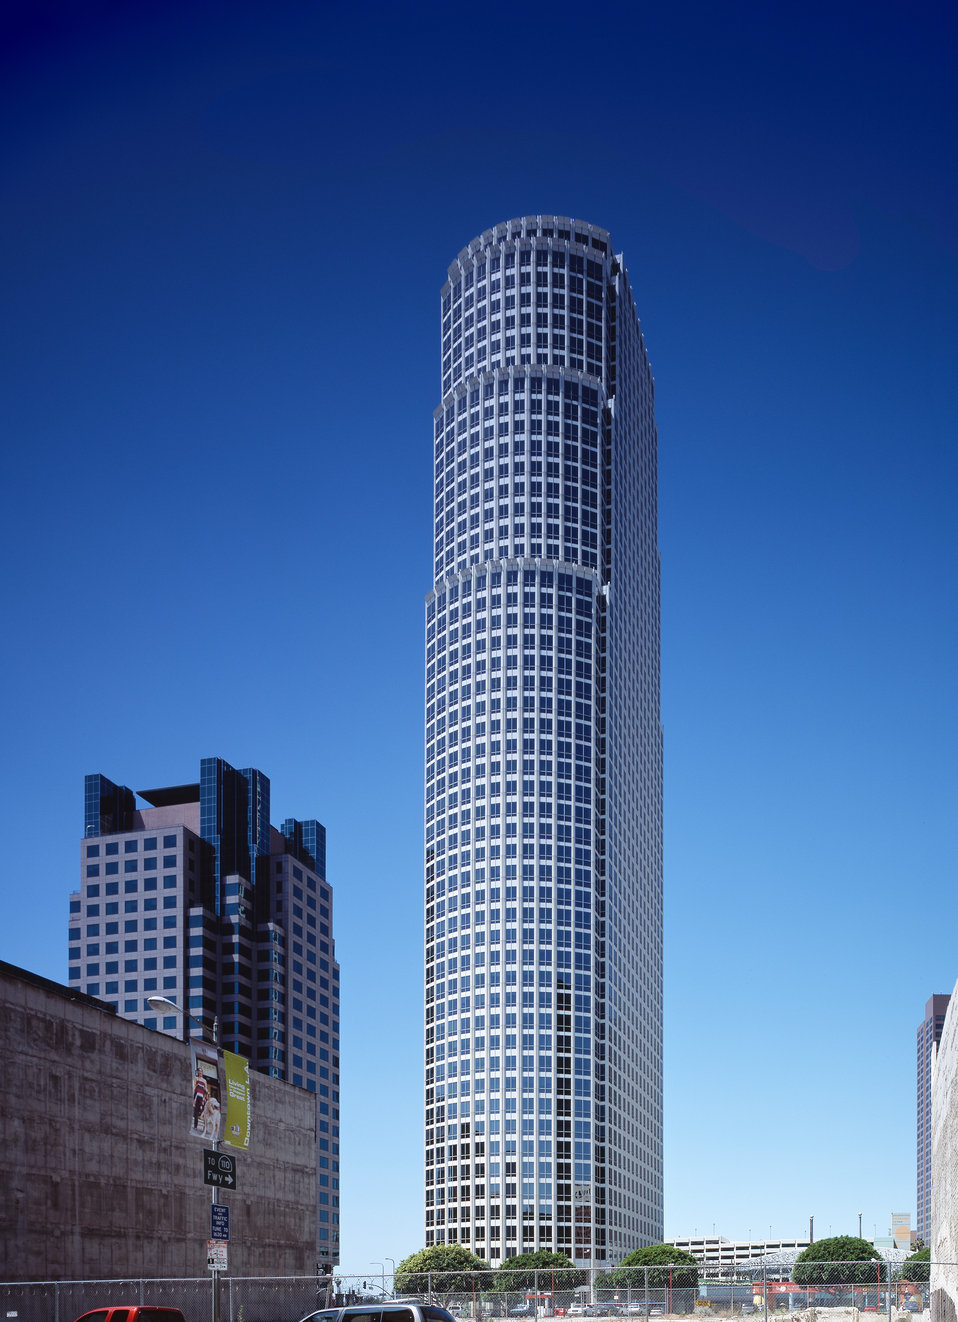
777 Tower, award winning building designed by César Pelli and built in 1991.
Citicorp Plaza's fifty-three-story 777 Tower, by Cesar Pelli and Associates, was completed on South Figueroa Street in Los Angeles in 1991. The building features a reflective white-metal skin and series of towers that seem to fold into one another, 04/07/05, LC-DIG-pplot-13725-01379 (digital file from LC-HS503-502).